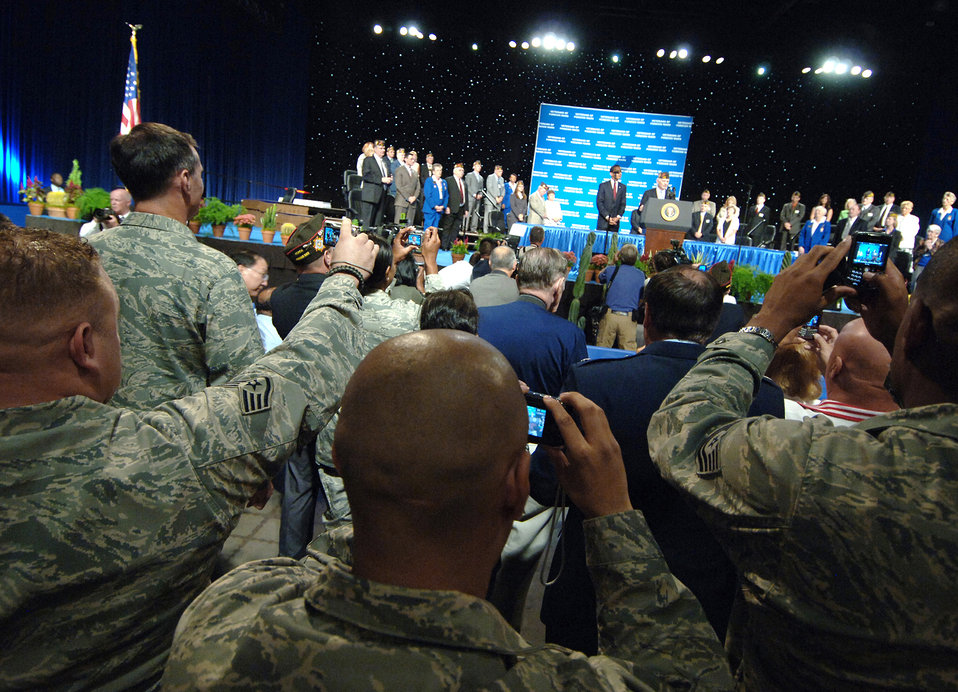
President meets Luke Airmen

Airmen from Luke Air Force Base, Ariz., hold up personal cameras in an attempt to photograph President Barack Obama at the 110th Veterans of Foreign Wars National Convention at the Phoenix Convention Center Aug. 17.